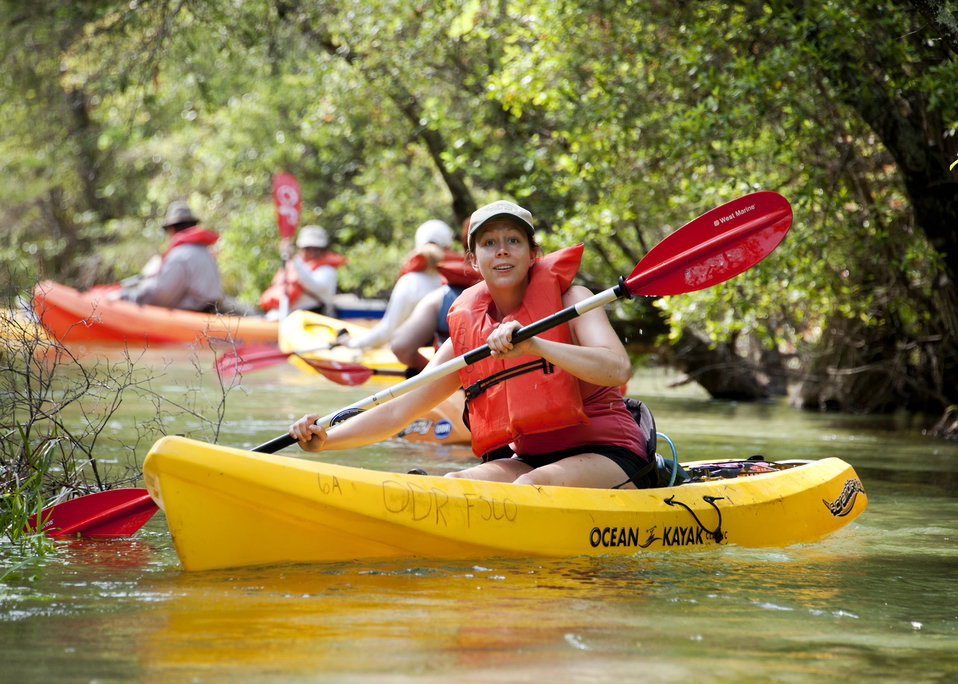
Earth Day Kayak Tour

Amanda Briant kayaks down Turkey Creek April 21, 2011, at Eglin Air Force Base, Fla., during the base's second annual Earth Day kayak tour and celebration. Ms. Briant is a member of the 96th Civil Engineer Squadron.